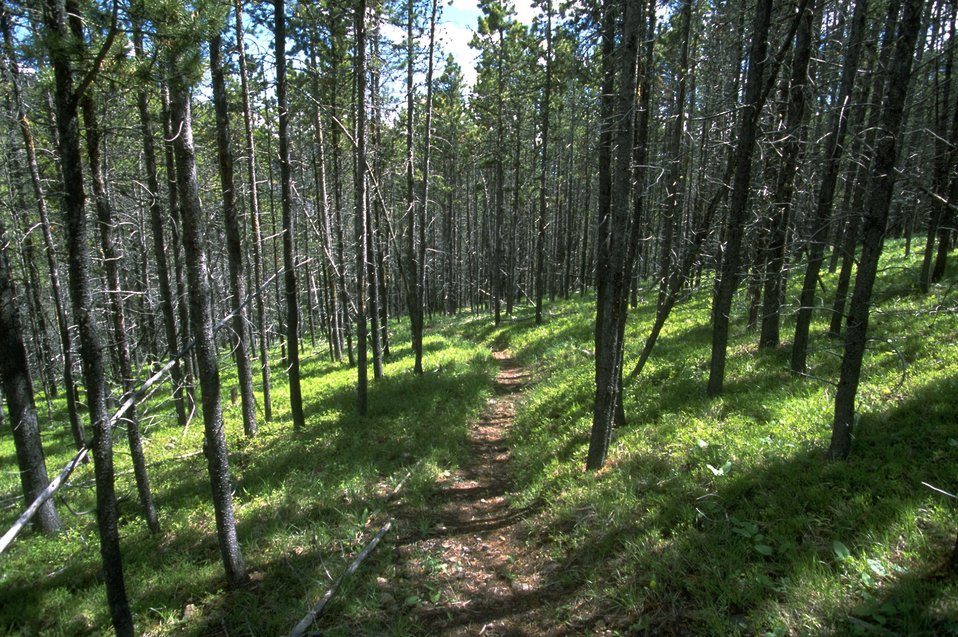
Hiking and game trail in the Judith Mountains